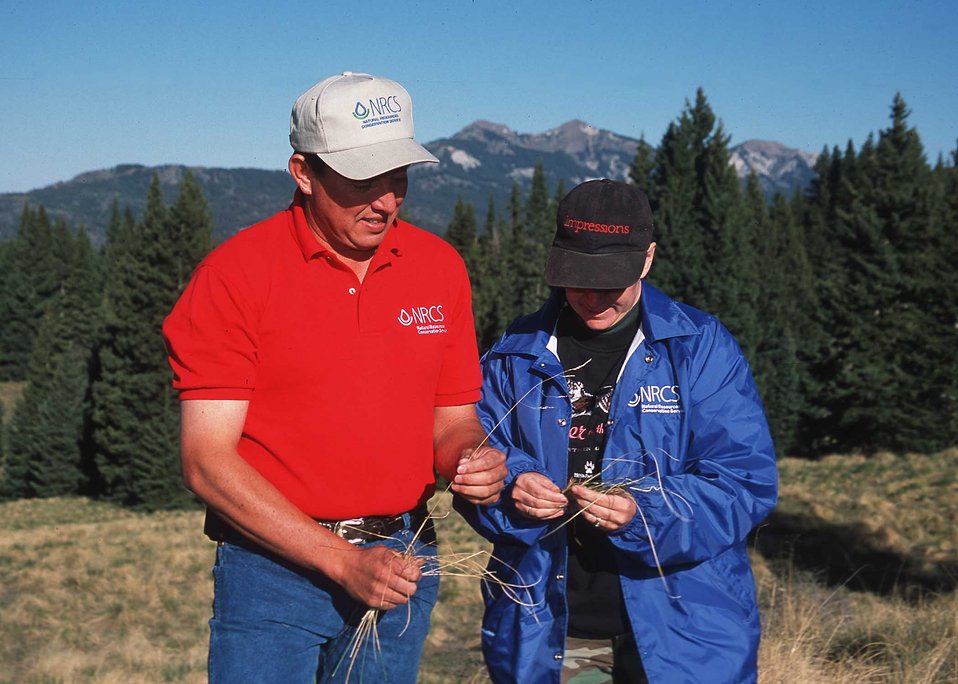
Northwest Field Team Leader Norm Vigil (red) and Soil Conservationist Jill Jensen (blue) provide grazing recommendations for a ranch that specializes in raising elk for hunting. Chama, New Mexico.